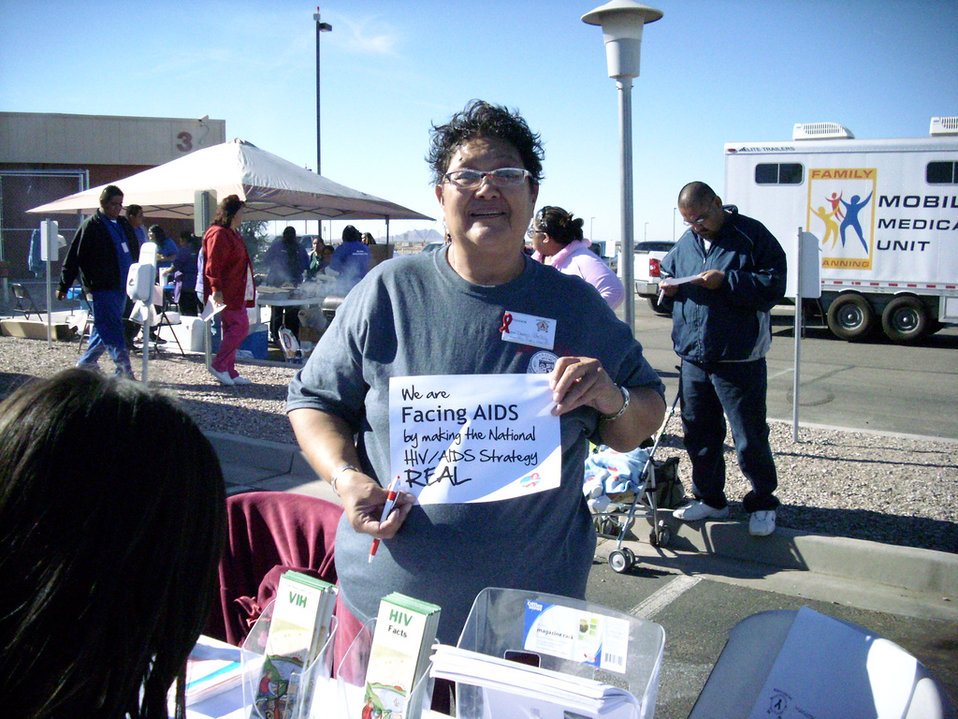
We are Facing AIDS through NHAS-27